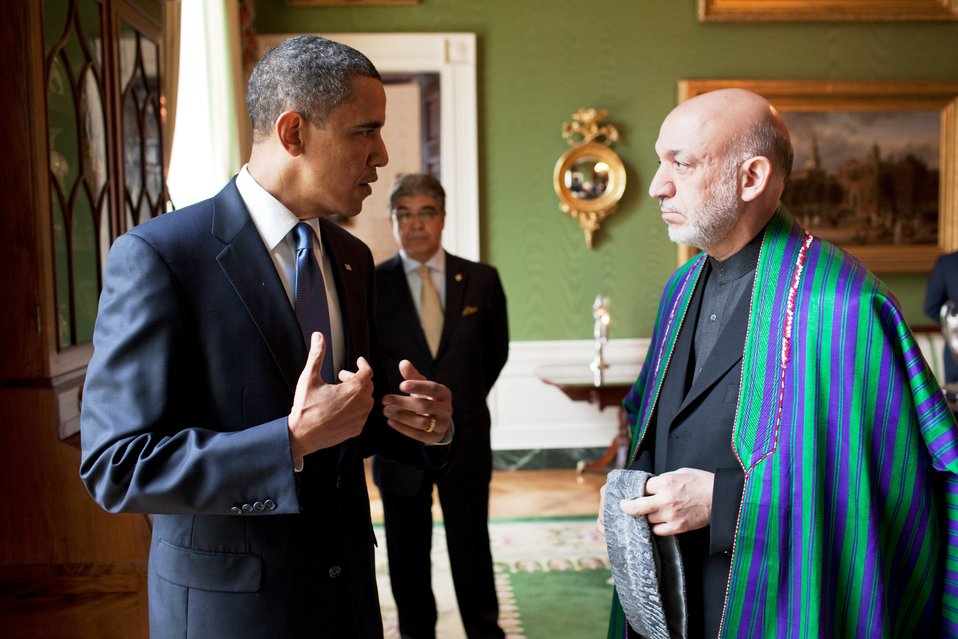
President Obama Speaks With Afghan President Karzai

President Barack Obama converses with President Hamid Karzai of Afghanistan at the White House in Washington, D.C., on May 12, 2010.